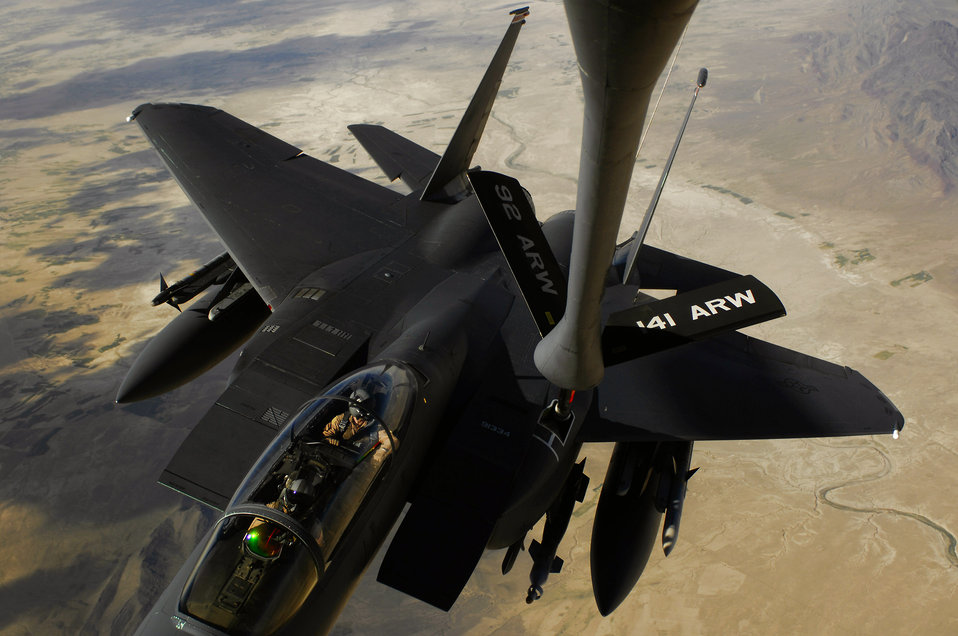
Airpower Summary for March 27: F-15Es protects friendly ground forces

An F-15E Strike Eagle aircraft receives fuel from a KC-135R Stratotanker during a mission over Afghanistan. The F-15E provides close-air support and armed aerial overwatch to deter enemy activities.